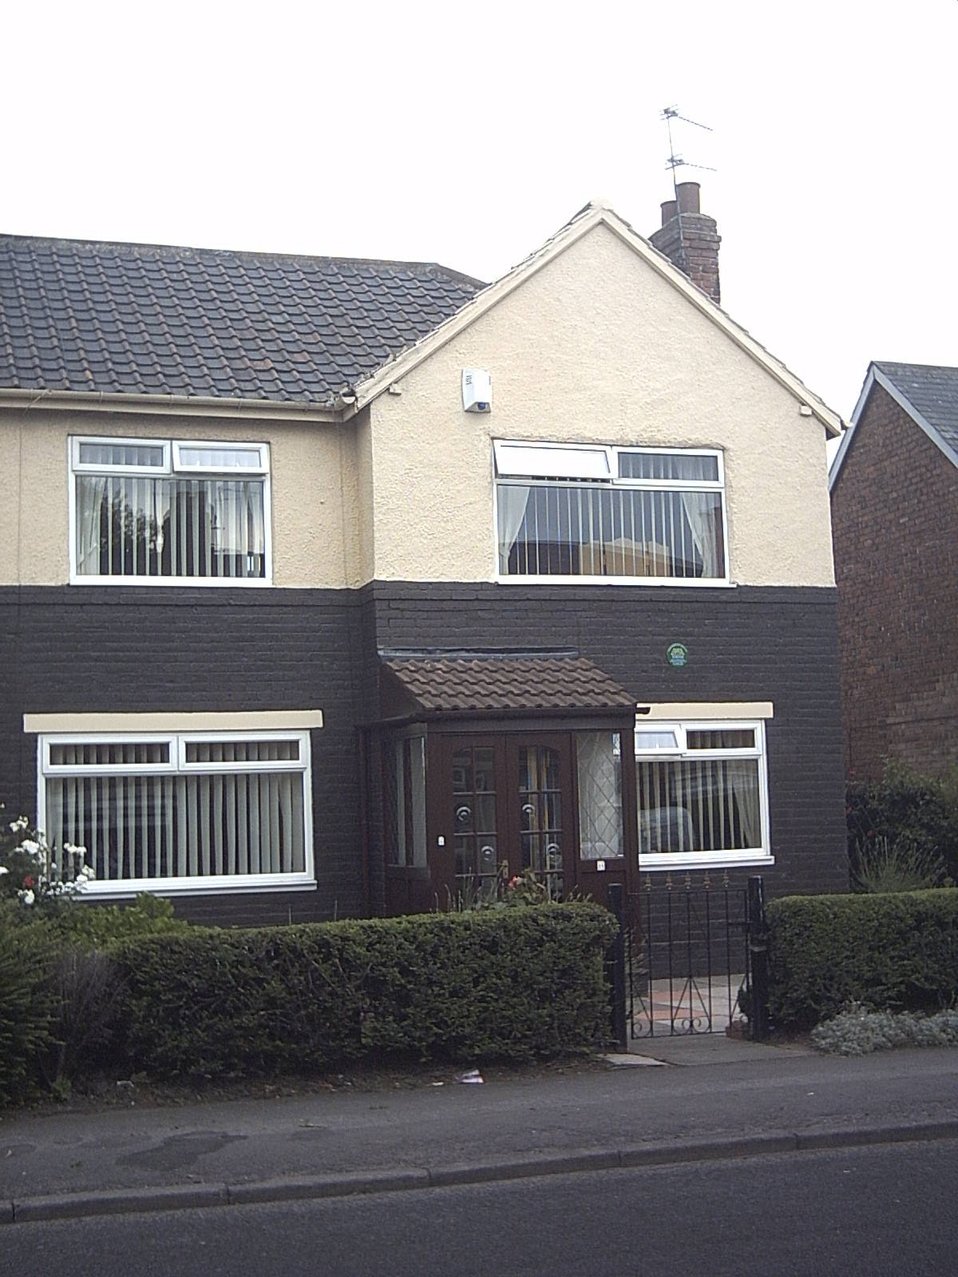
Brian Clough's house in Grove Hill, Middlesbrough. Taken by myself on 17th June 2006.